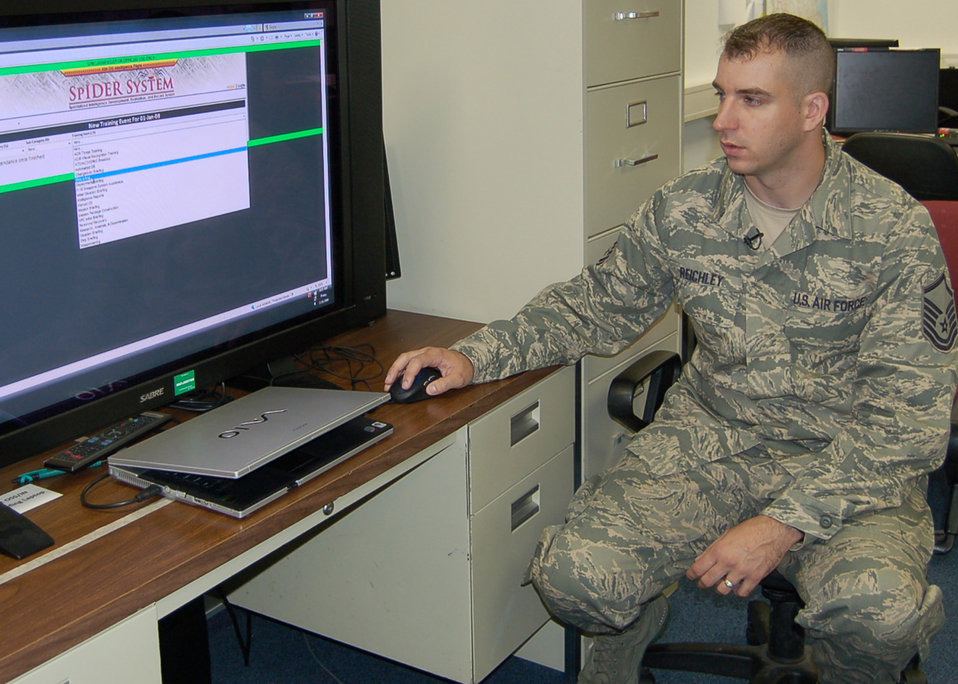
Hobby earns Spangdahlem Airman $10K

Master Sgt. Erich Reichley monitors training progress in his shop through the Specialized Intelligence Development, Evaluation and Record System at Spangdahlem Air Base, Germany. Sergeant Reichley created the